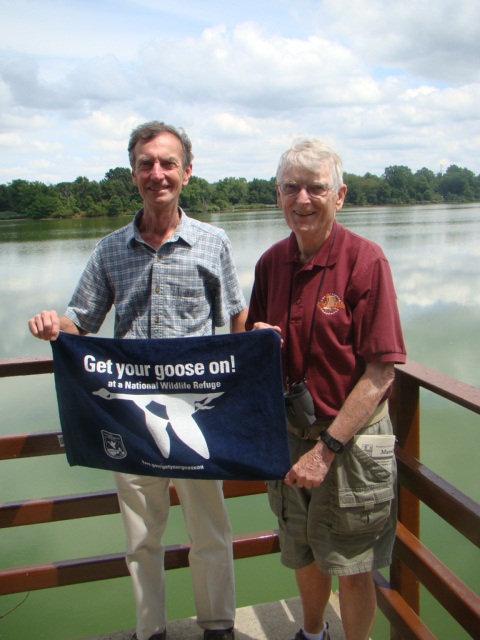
Get Your Goose On!

GYGO! at John Heinz NWR.